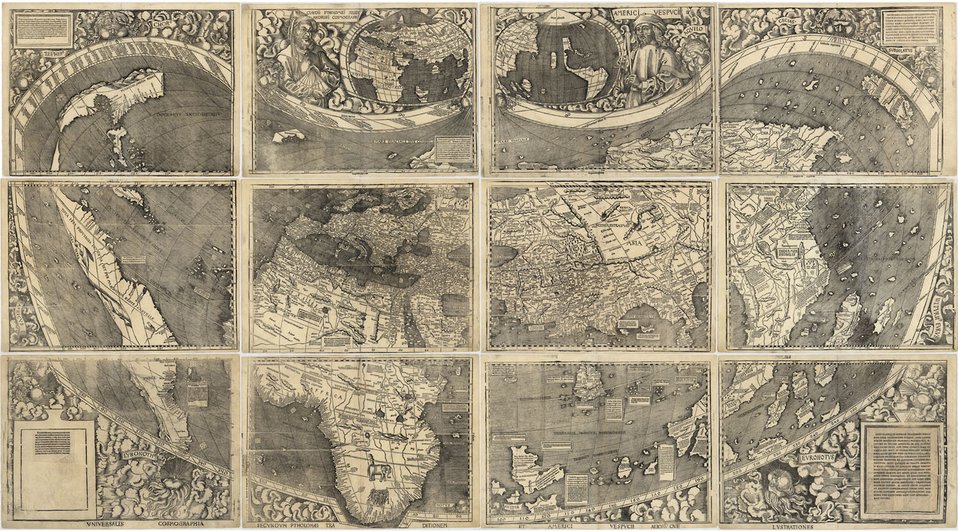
NIST to Preserve 1507 Map. America's 'Birth Certificate'

This map shows the outline of North and South America, as well as the Isthmus of Panama, and was the first to depict clearly a separate Western Hemisphere, with the Pacific as a separate ocean.